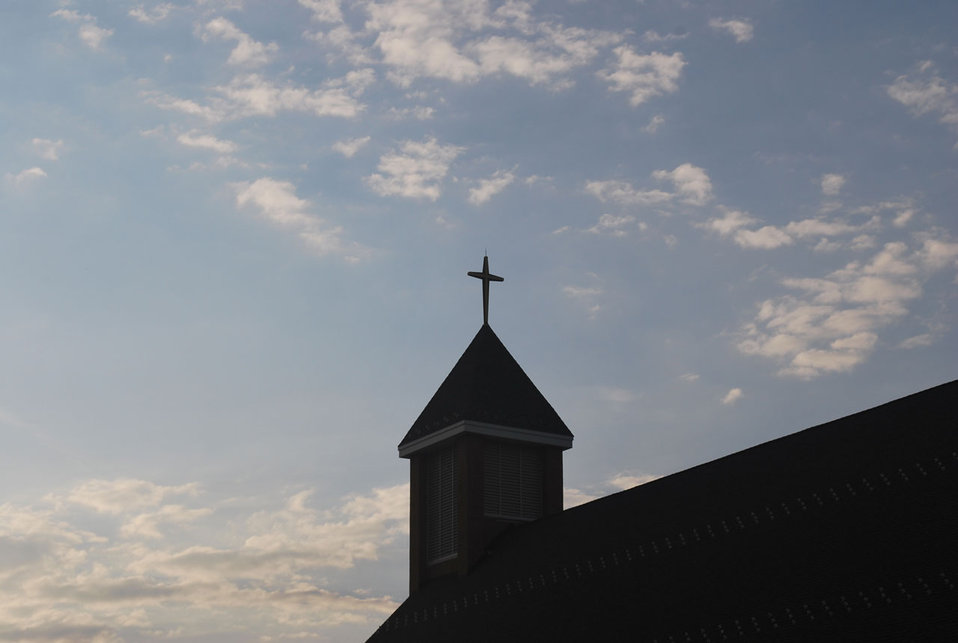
Church cross against the sky.